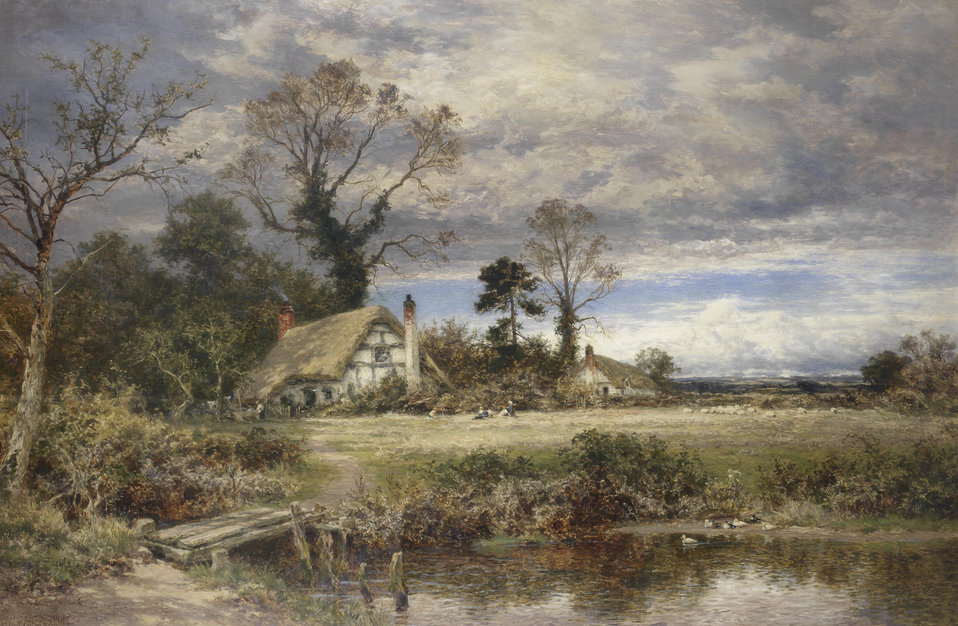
A gleam before the storm. Signed and dated 'B.W.Leader.1901.' (lower left). Oil on canvas. 122.5 x 185 cm